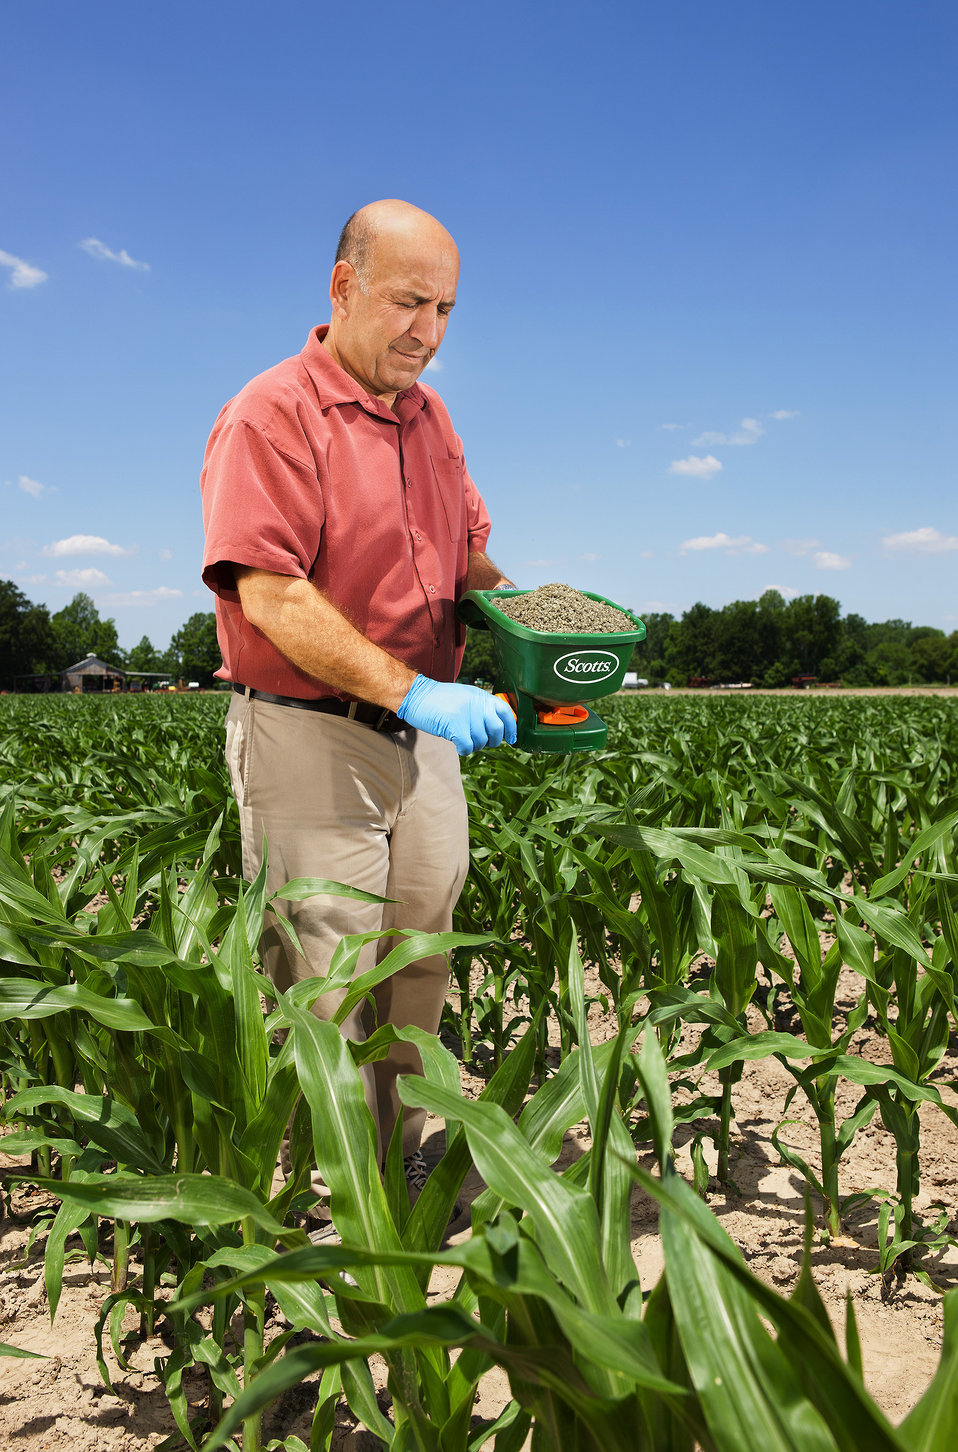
U.S. Department of Agriculture (USDA) Agricultural Research Service (ARS) plant pathologist Hamed Abbas applies the nontoxigenic Aspergillus flavus formulated in bioplastic granules to knee-high corn on Sept. 21, 2003.